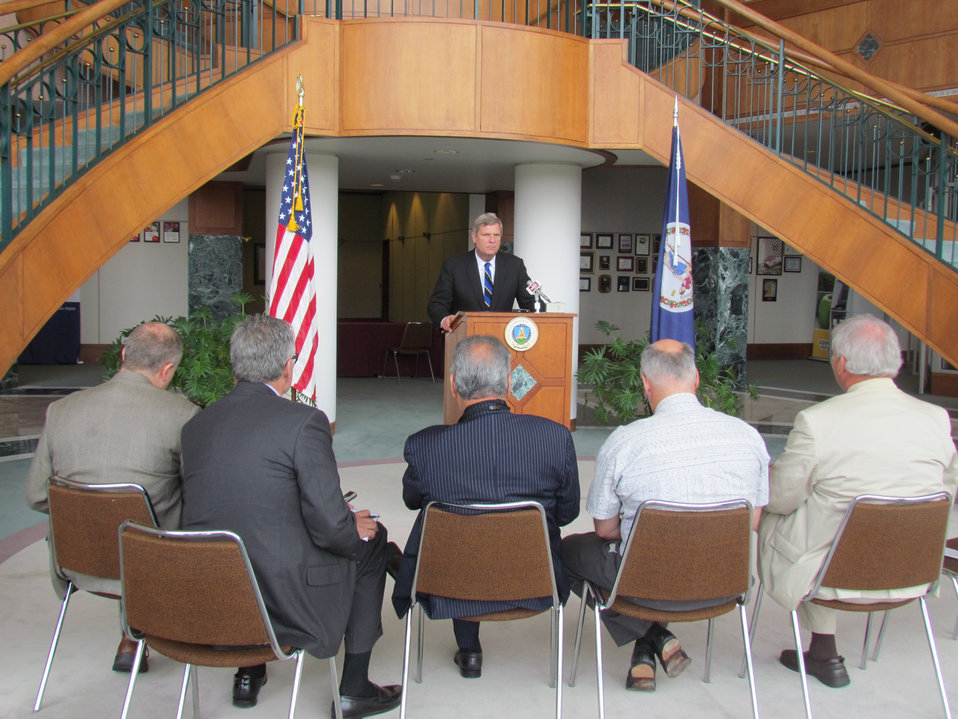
Agriculture Secretary Tom Vilsack addresses assembled media, after announcing New and Expanded Access to Credit for America's Farmers and Ranchers in Richmond, VA., on Wednesday, May 23, 2012.